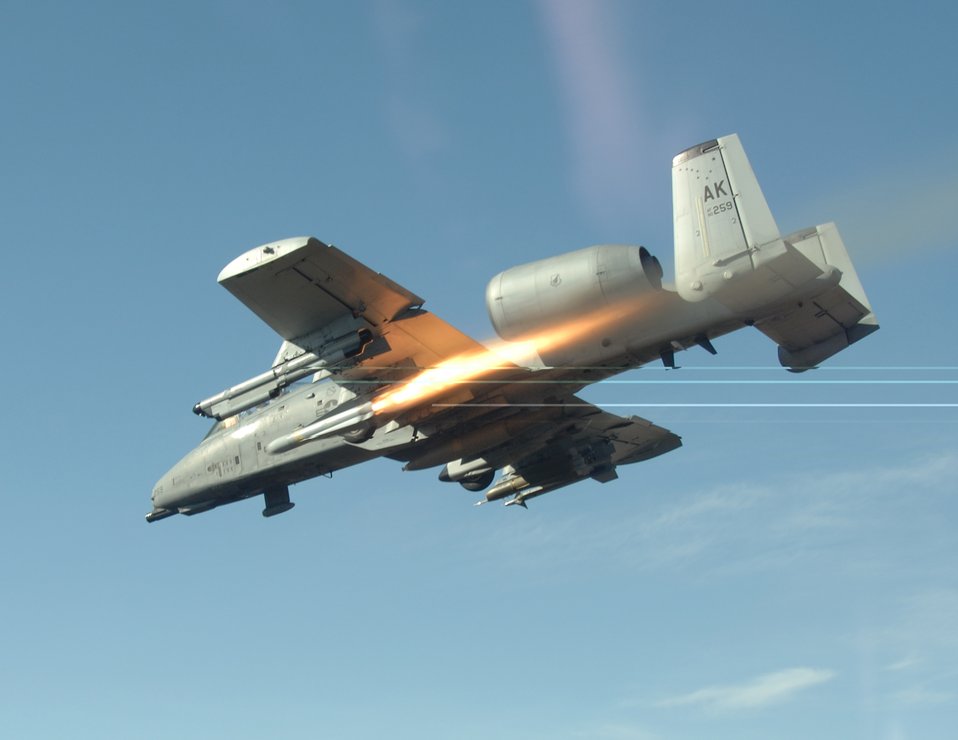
Thunder and lightning

1st Lt. Dale Stark fires an AGM-65 Maverick missile from an A-10 Thunderbolt II April 24 over the Pacific Alaska Range Complex during live-fire training. Lieutenant Stark is an A-10 pilot from the 355th Fighter Squadron from Eielson Air Force Base, Alaska. Members from the 355th FS are tasked to provide mission ready A-10s and a search and rescue capability, in Alaska and deployed sites worldwide.